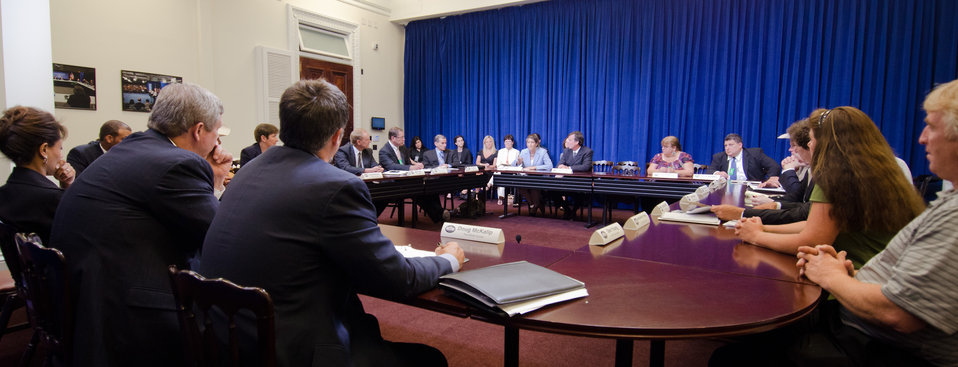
Crista Carrell (center, light blue outfit) and Rick Huszagh (to her right), representing Down to Earth Energy, GA, attended a meeting at the White House, in Washington, DC, on July 6, 2011. They were asked to participate along with President Barack Obama, Agriculture Secretary Tom Vilsack, the President's Domestic Policy Adviser Melody Barnes and rural communities leaders from across the country for the White House Rural Champions of Change event to strengthen rural communities and promote economic growth. When Rick Huszagh and Crista Carrell purchased part of her family’s farm in 1995, their focus was on farmland preservation as much as the creation of a successful business enterprise. Mountain Creek Farm started out selling Boer goats to purebred and commercial breeders and Bermuda hay to neighboring horse farms. Goat kids were raised each spring to sell for breeding stock or meat. The couple improved their farm marketing by participating in shows, performance tests, and field days. The farm’s proximity to the University of Georgia facilitated their involvement in herd management studies related to the control of internal parasites. They took full advantage of resources offered by the Cooperative Extension Service and the Natural Resources Conservation Service, and participated in the Environmental Quality Incentives Program (EQIP). Rick and Crista’s interest in sustainability issues on the farm led them to research and implement small-scale biodiesel production for the tractors in 2005. In 2006, they intensified their renewable energy involvement when they were awarded a Renewable Energy for America Program (REAP) grant and USDA guaranteed loan. Along with like-minded partners, they established Down to Earth Energy, a commercial biodiesel production facility located adjacent to the farm. Concern with some of the inefficiencies in the biodiesel process led them to partner with the University of Georgia to develop a more effective catalyst. The concept was further funded by an EPA Small Business Innovation Research Grant (SBIR) and a Venturelab grant. Crista was appointed a Walton County Soil and Water Conservation District Supervisor in 2006. She has spearheaded the district’s sponsorship of community forestry activities in Monroe and served as the coordinator of Atha Road Elementary School’s outdoor classroom from 2003-2011. Her work as a district supervisor led to her being hired as the first full-time Executive Director of the Georgia Association of Conservation District Supervisors (GACDS) in 2007.